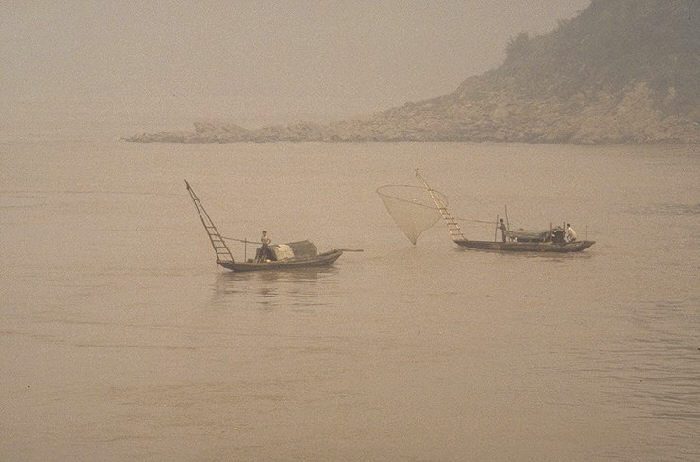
Fishermen and boats on Yangtze River in early morning fog.